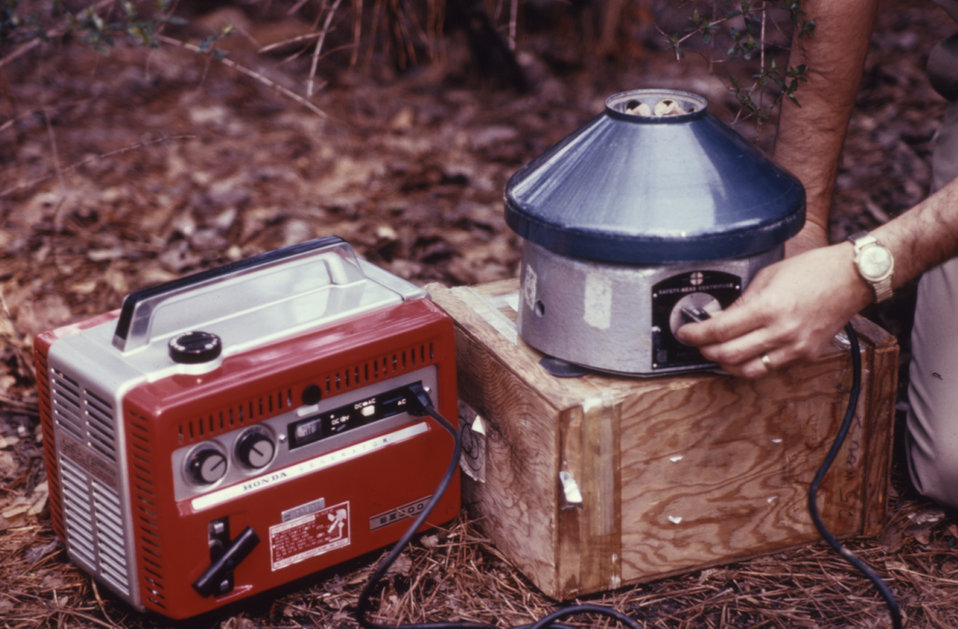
This field technician is working with field centrifugation equipment, and a portable generator in this 1974 arbovirus study.